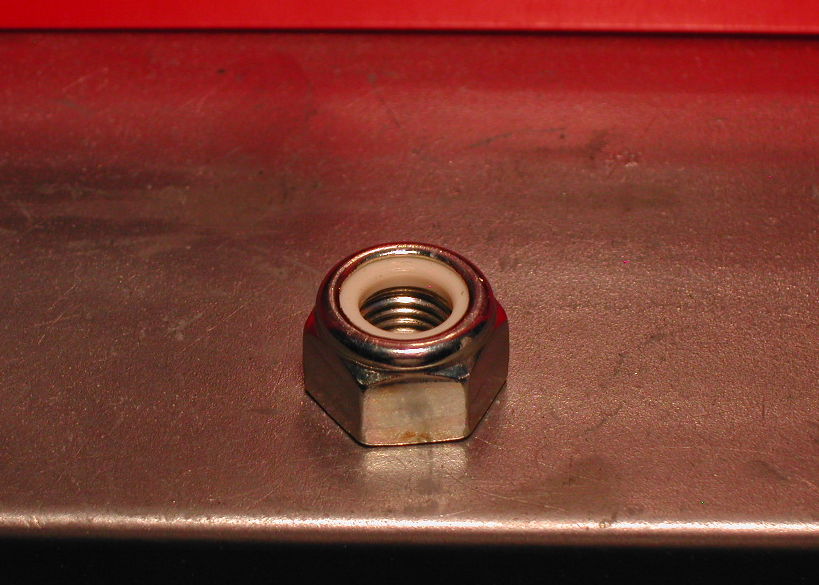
Deutsch: Selbstsichernde Mutter M10×1,25 Locking nut M10x1.25 Italiano: Dado autobloccante M10x1,25